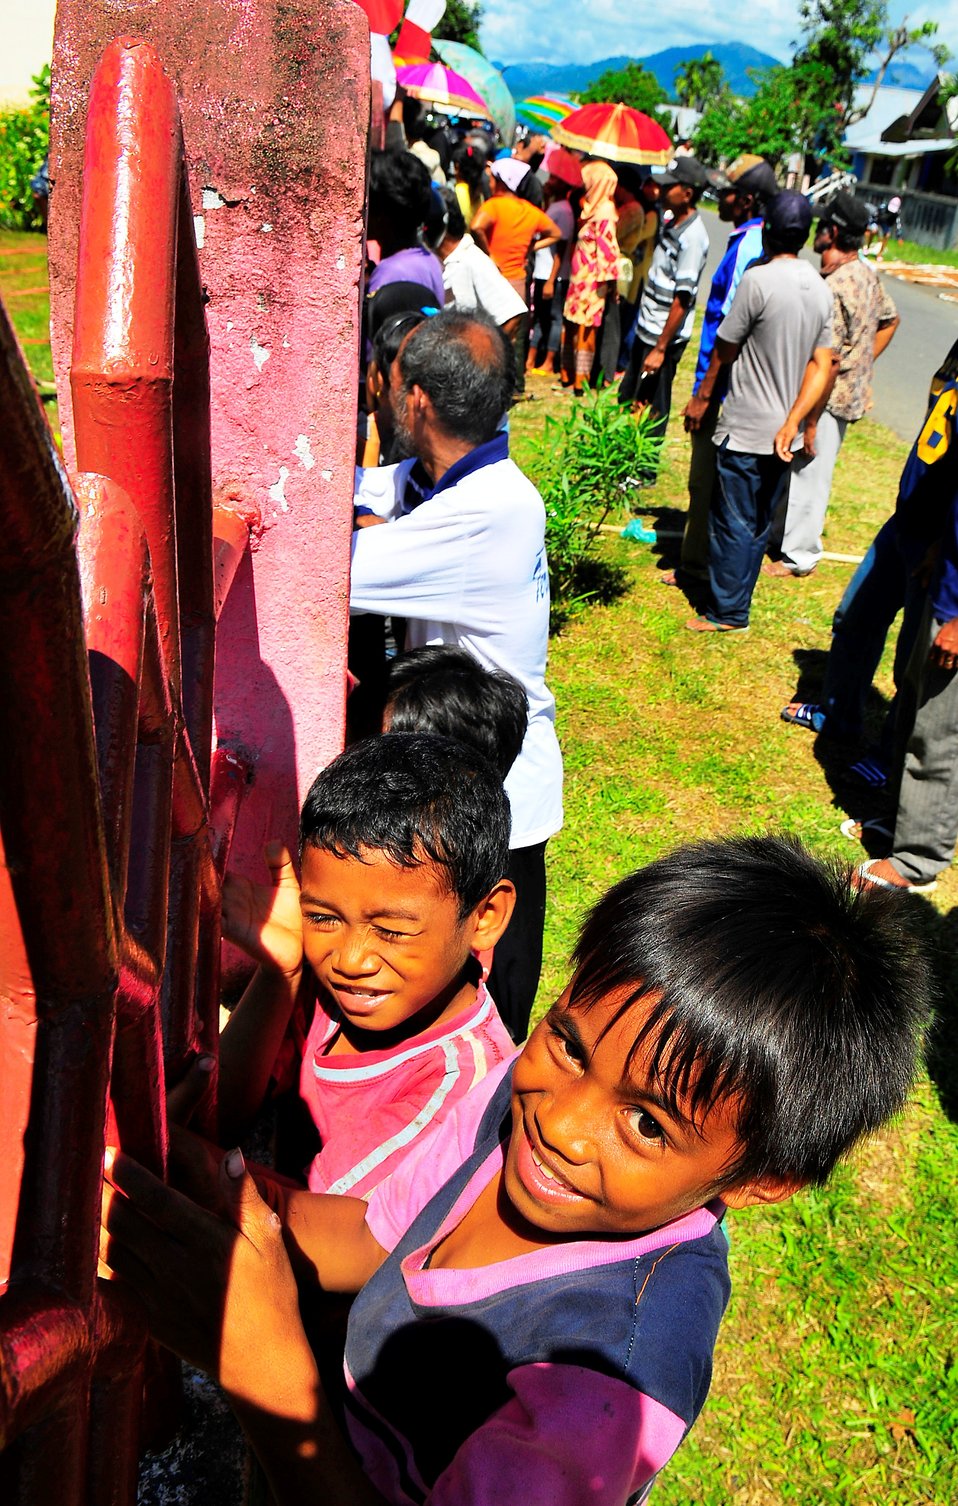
Local Indonesians wait to receive medical screening and treatment at a medical civic action program, conducted at the Dokulamo school by the Military Sealift Command hospital ship USNS Mercy (T-AH 19) during its visit to Tobelo, Indonesia, on July 14, 2010. Mercy is deployed for Pacific Partnership 2010, the fifth in a series of annual U.S. Pacific Fleet endeavors conducted in Indonesia as a disaster relief exercise aimed at strengthening regional partnerships.